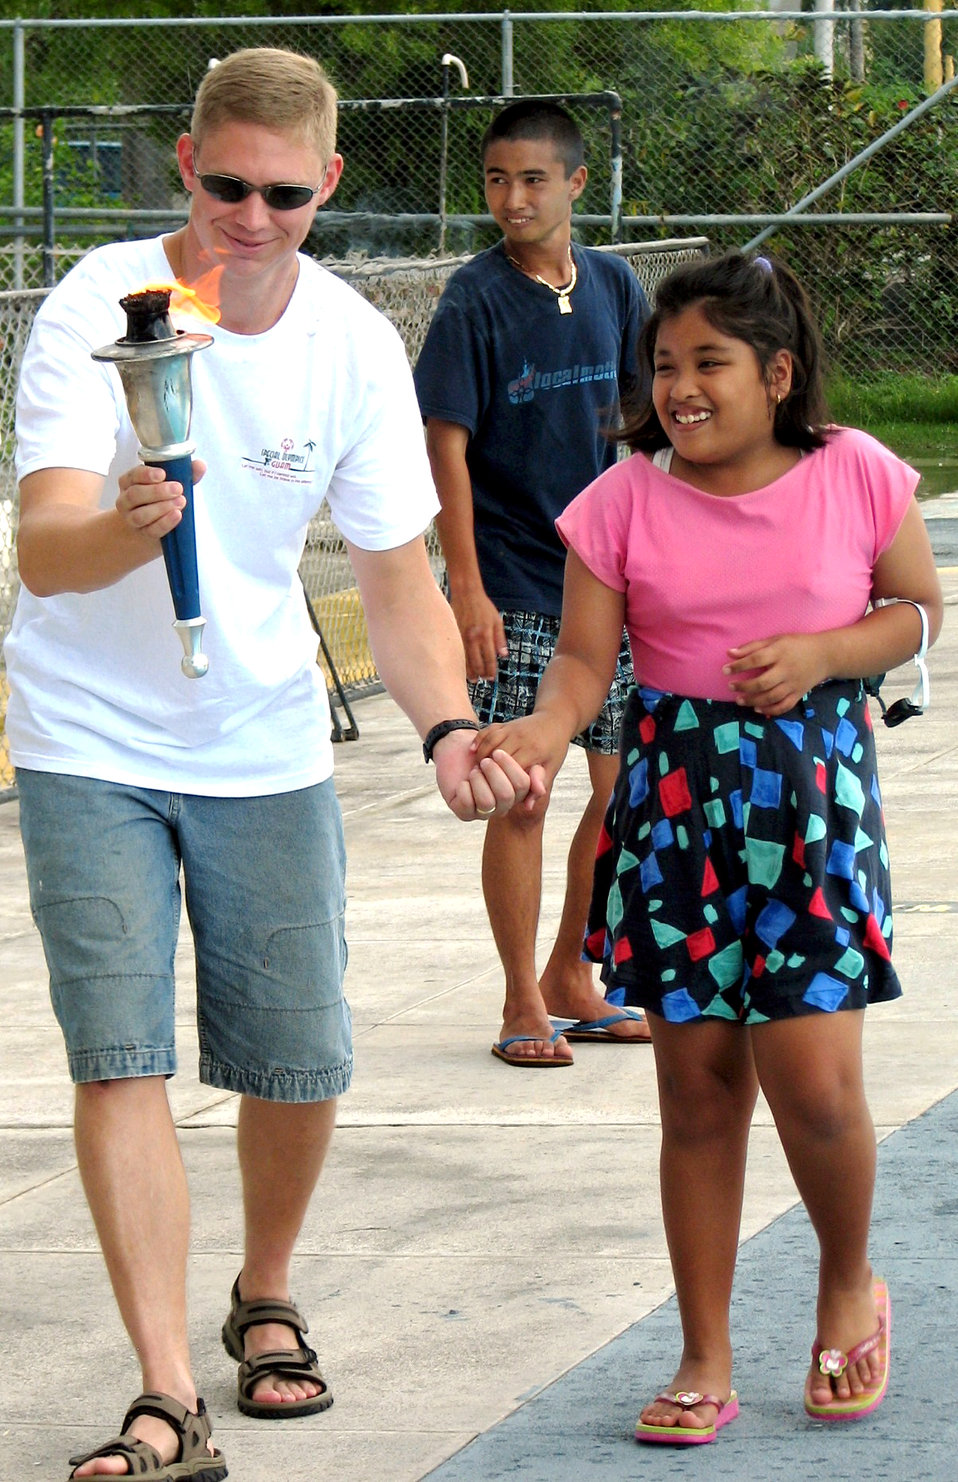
2006 Guam Special Olympics

Capt. Ryan Huckabay holds the hand of athlete Miah Meneses while carrying the torch at the opening ceremonies of the 2006 Guam Special Olympics aquatic event on Saturday, June 3, 2006. Volunteers from the 393rd Expeditionary Bomb Squadron and 36th Expeditionary Aircraft Maintenance Squadron at Andersen Air Force Base, Guam, assisted at the events, acting as official timekeepers, distributing medals and helping in other areas. Captain Huckabay is assigned to the 393rd EBS.